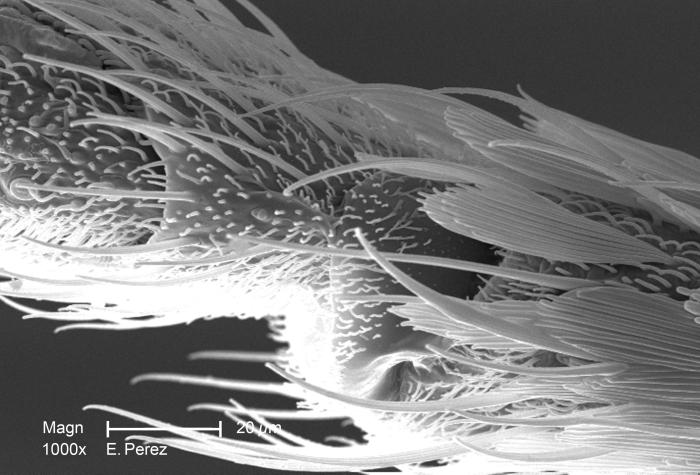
At a magnification of 1000X, twice that of PHIL 10557, this scanning electron micrograph (SEM) revealed some of the minute exoskeletal details found at the proboscis tip of an unidentified mosquito found deceased in the suburbs of Decatur, Georgia. The proboscis is the organ used by this, as well as other like insects, to feed upon the blood of a warm-blooded host, including human beings. What you see here, is the sheath that encases a pair of needle-sharp "stylets", which together are known as the "fascicle". The larger of the two stylets, known as the "labrum", when viewed in cross-section, takes on the shape of a "V", and acts as a gutter, which directs the ingested host blood towards the insect's mouth. The 'hair-like' structures are known as "setae", and are really extensions of the insect's exoskeletal, chitinous covering. These setae act as sensory organs, transmitting impulses indicating changes in the organism's environment.